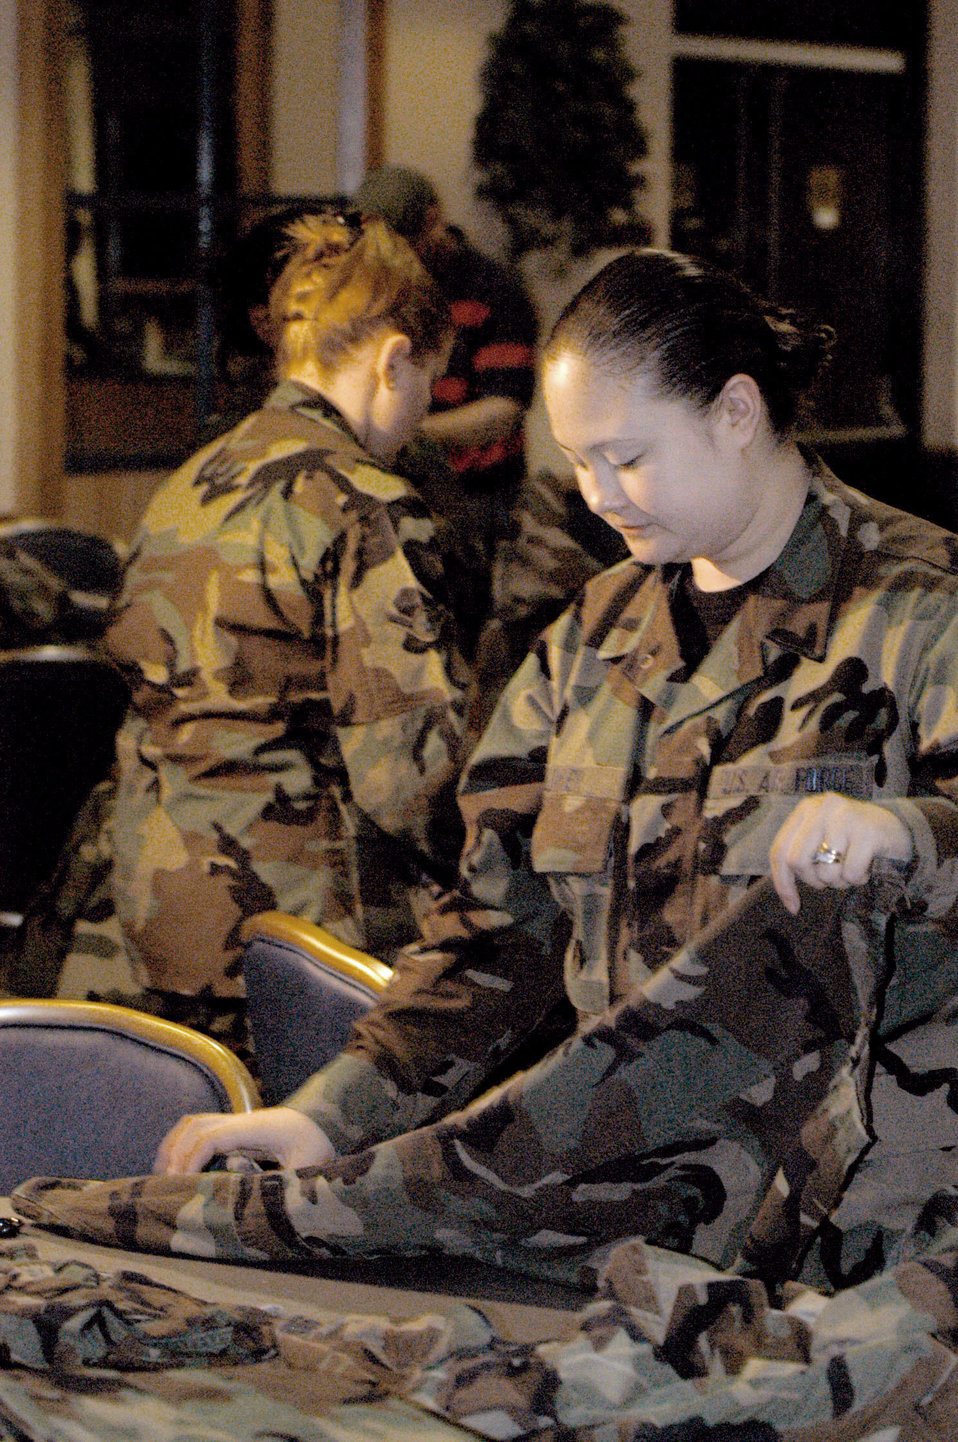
Airmen make good use of old uniforms

ROYAL AIR FORCE LAKENHEATH, England -- Senior Airman Sheila Luker cuts up unserviceable battle dress uniforms here. The material was used to make blankets for local homeless people. The volunteers also made teddy bears from the material to donate to Iraqi children. Airman Luker is a customer service representative with the 48th Mission Support Squadron.